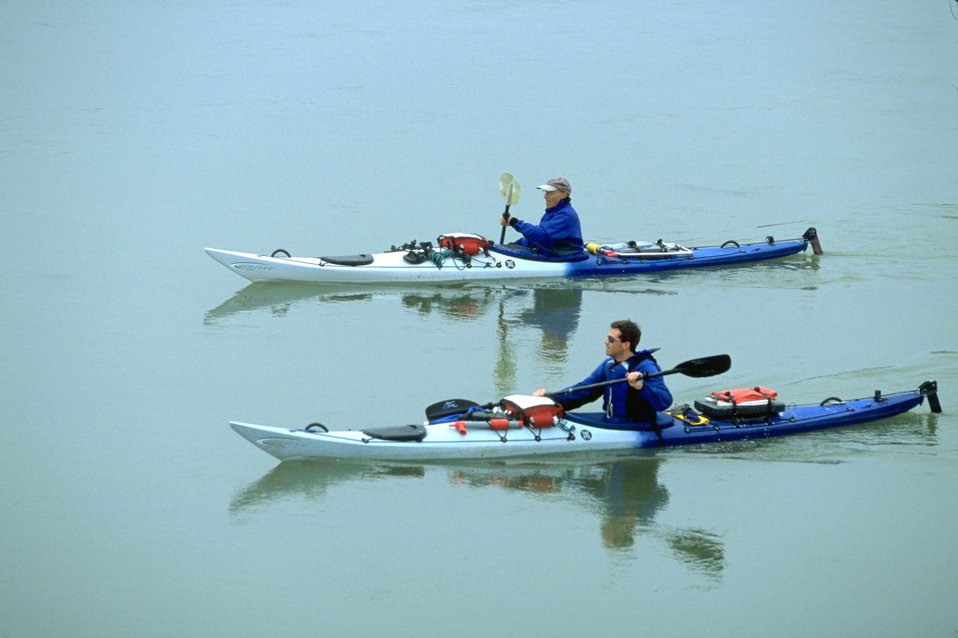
Floaters on Missouri River